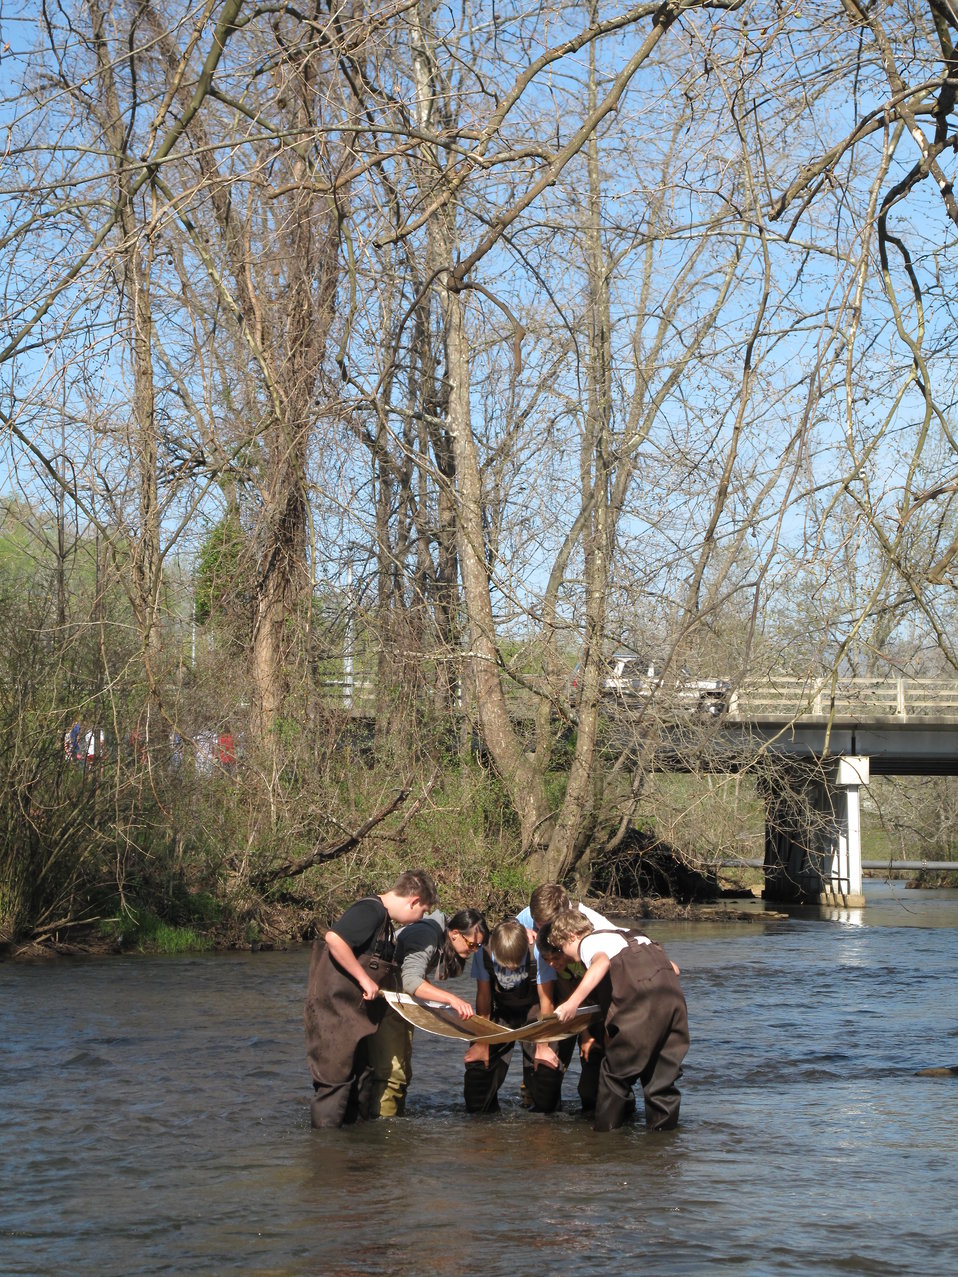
Jenny Sanders helping students with kick seine

Over the course of four days in late April 2014, every eighth grade student at North Carolina’s Macon Middle School, Highlands School, Nantahala School, and Trimont Christian Academy visited Cartoogechaye Park, in Macon County, to learn about rivers.

The students rotated through four stations:
1) water chemistry where they had the opportunity to help test water from Cartoogechaye Creek to gain an idea of the stream’s water quality;
2) aquatic insects, where students collected and identified animals like mayflies and caddisflies, learning how life in the river reflects the health of the river
3) fish, where they were able to collect and identify fish in the stream, and then
4) stream flow, where they measured and calculated the downstream movement of water, including the velocity of the water and the total volume of water being moved per second.

The event was organized by the University of Georgia's Coweeta Long-Term Ecological Research (LTER) Program, which is based at the USFS Coweeta Hydrologic Laboratory. (coweeta.uga.edu/), with sizable support from the Land Trust for the Little Tennessee. Other supporters include the U.S. Fish and Wildlife Service, N.C. Natural Heritage Program, and N.C. Division of Water Resources.